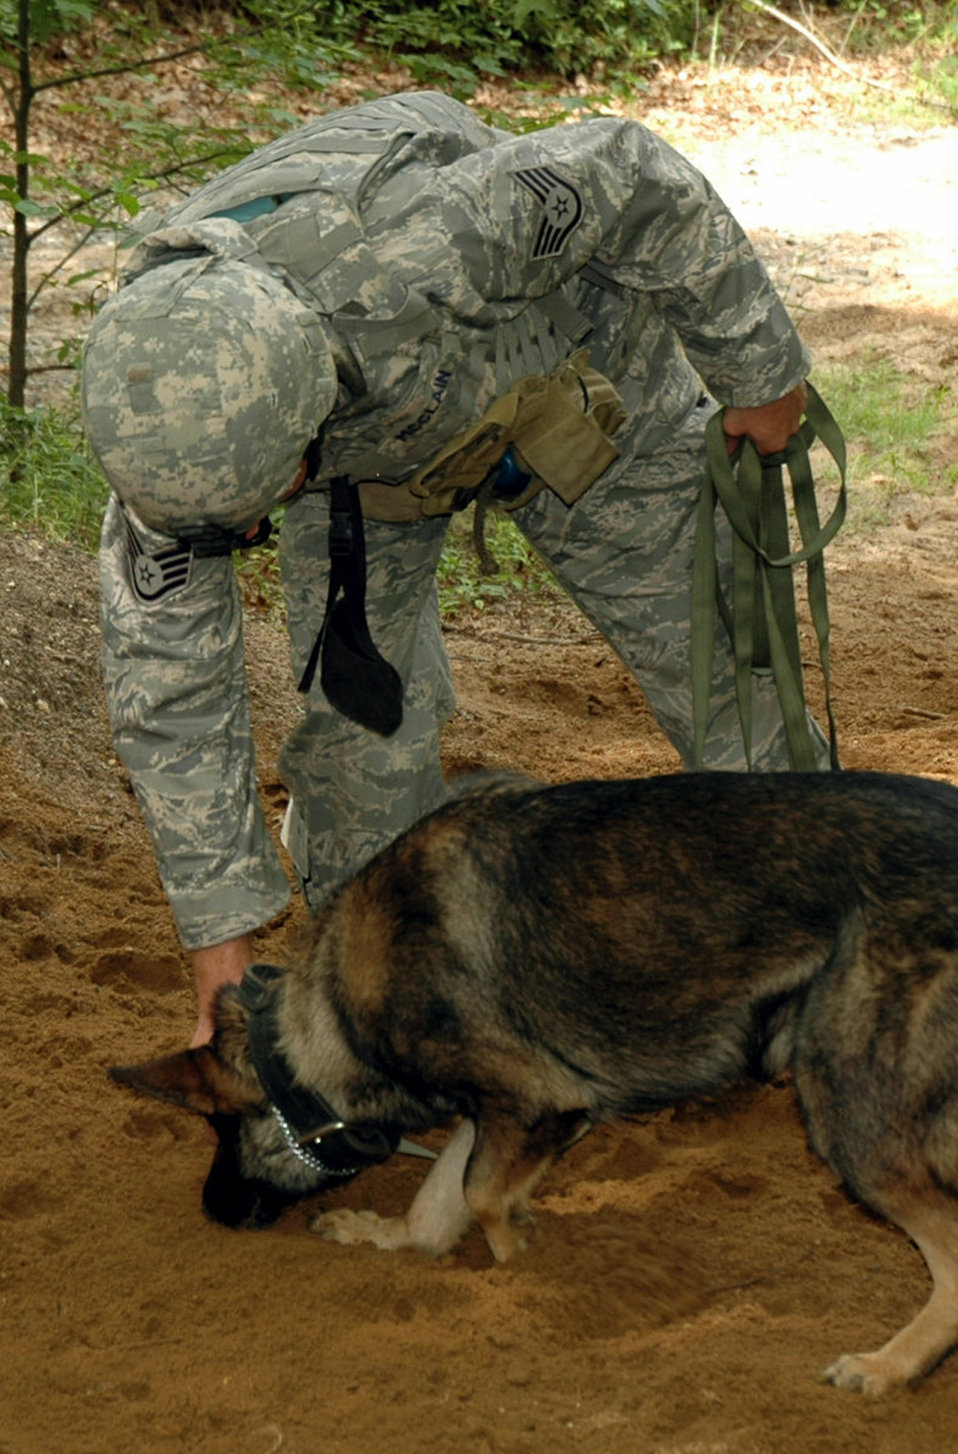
Teaching K-9 detection tactics

Staff Sgt. David McClain and his military working dog, Bak, practice detection techniques during training in the Air Force Phoenix Warrior Training Course July 10 at Fort Dix, N.J. Phoenix Warrior is taught by members of the Air Force Expeditionary Center's Expeditionary Operations School and the 421st Combat Training Squadron. Sergeant McClain is from Pope Air Force Base, N.C.